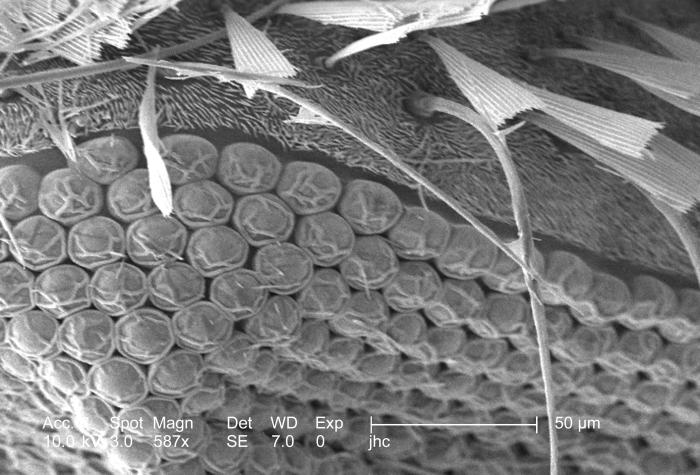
At a moderately high magnification of 587x, this scanning electron micrograph (SEM) revealed some of the morphologic features displayed on the exoskeletal surface of an Anopheles dirus mosquito's head region. Included in this view were aspects of the insect's compound eye revealing the structural subunits known as "ommatidia", which when working in unison, will provide the mosquito with a composite view of its environment, much like a mosaic depiction. Also, note the modifications of its exoskeletal scales, and sensorial hairs known as "setae", atop its head.